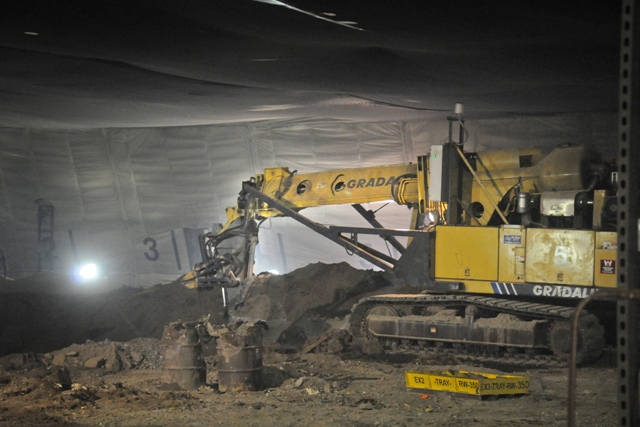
Idaho Site Completes Cleanup with Help from Workers who Shipped Waste Decades Ago

A specially modified waste excavator was used to remove transuranic waste from Pit 9.

From the 1950s until the 1980s, workers at the former Rocky Flats Plant near Denver, Colo., sent hundreds of thousands of barrels and boxes of radioactive and hazardous waste to the Idaho National Laboratory (INL) for disposal both above and below ground. Now, some of those who sent the Cold War weapons waste to Idaho are helping identify the waste in pits dug up for the first time in more than 40 years.